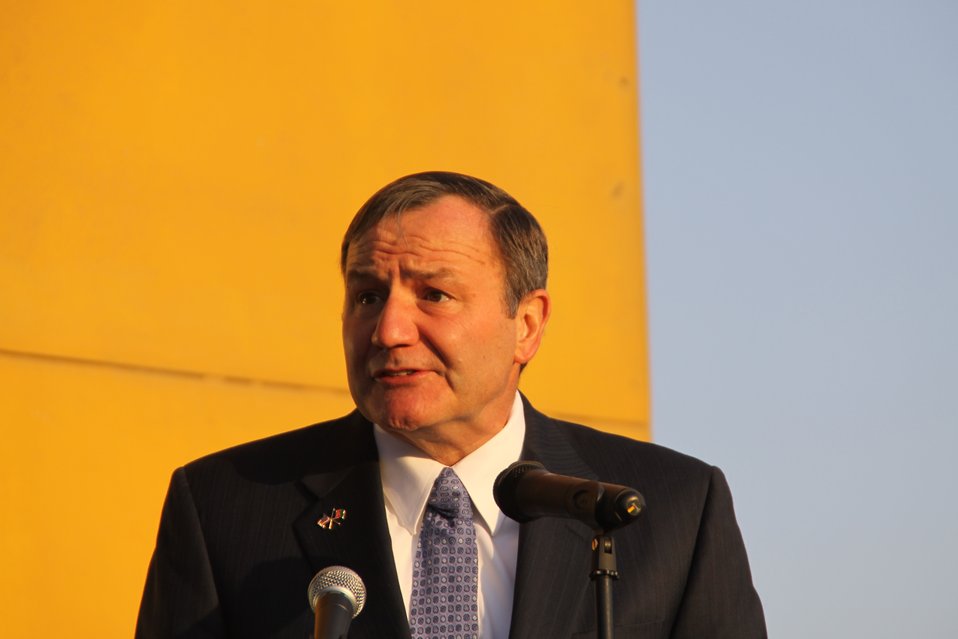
Ambassador Eikenberry